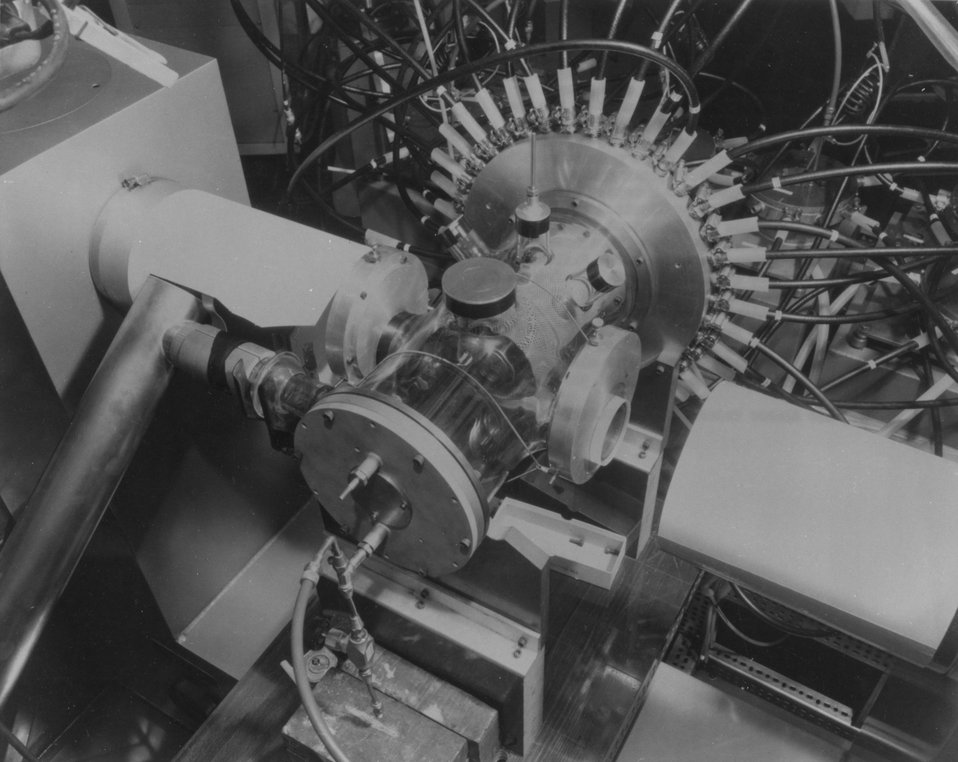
Dense Plasma Device developed at the Los Alamos Scientific Laboratory. c. 1968